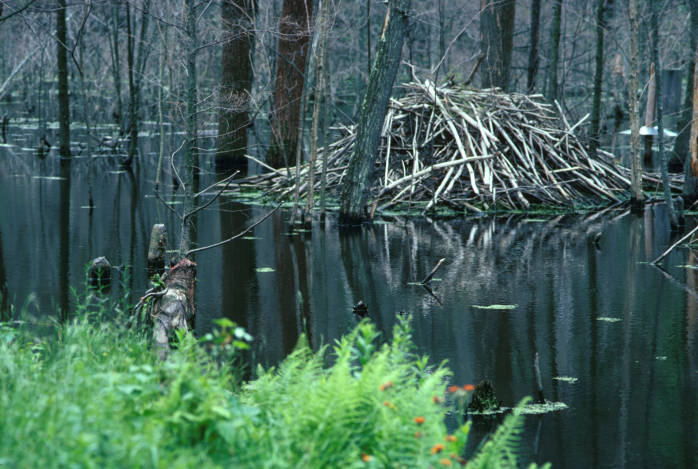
Beaver Lodge